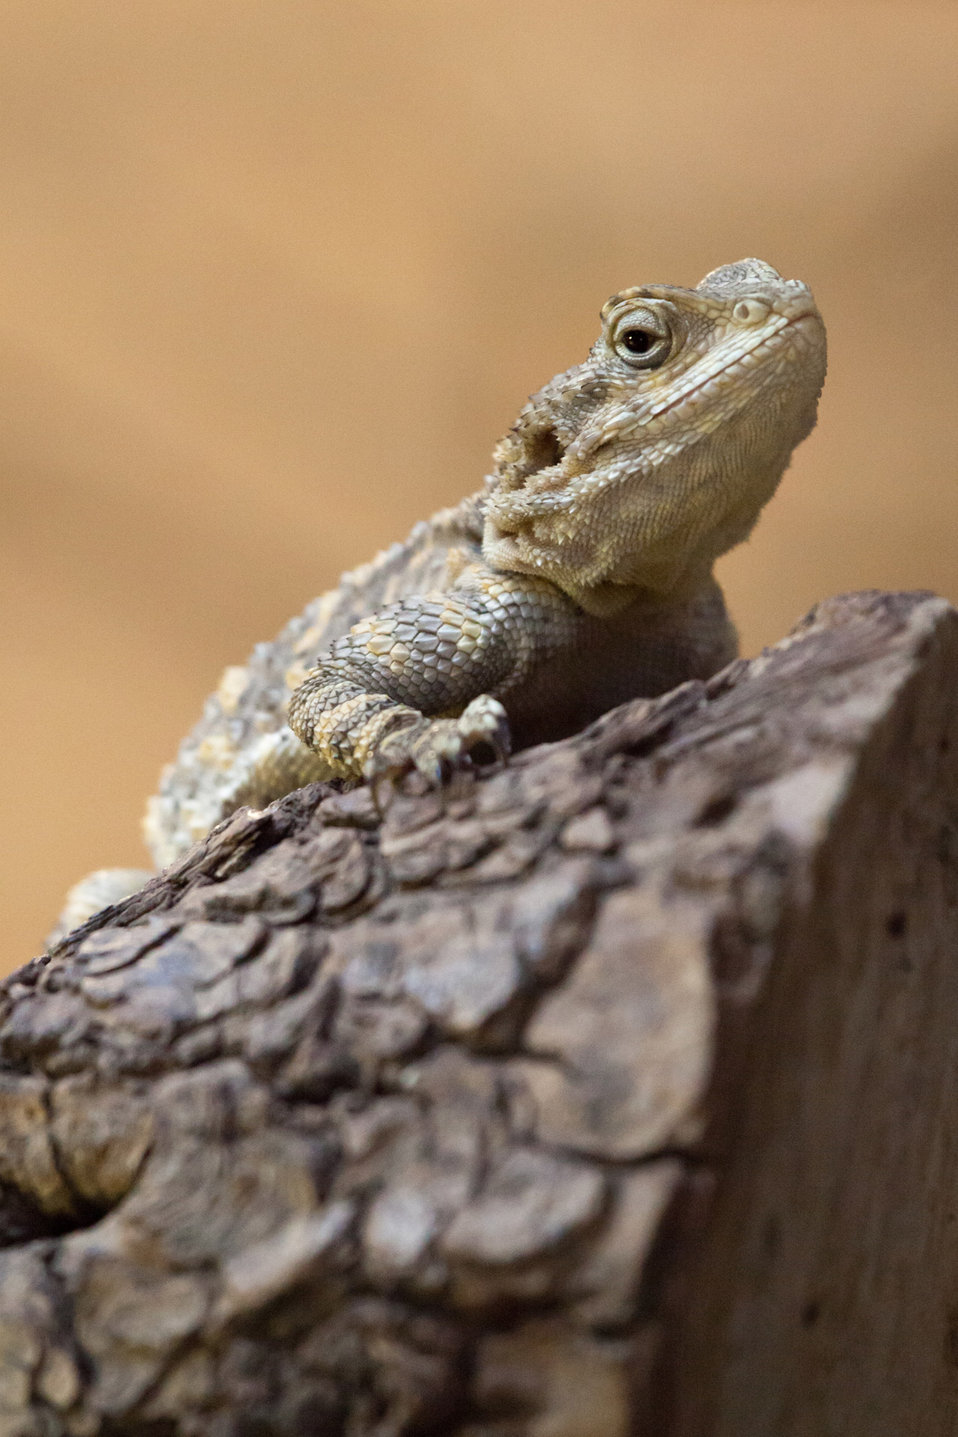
Bearded dragon lizard on the branch.